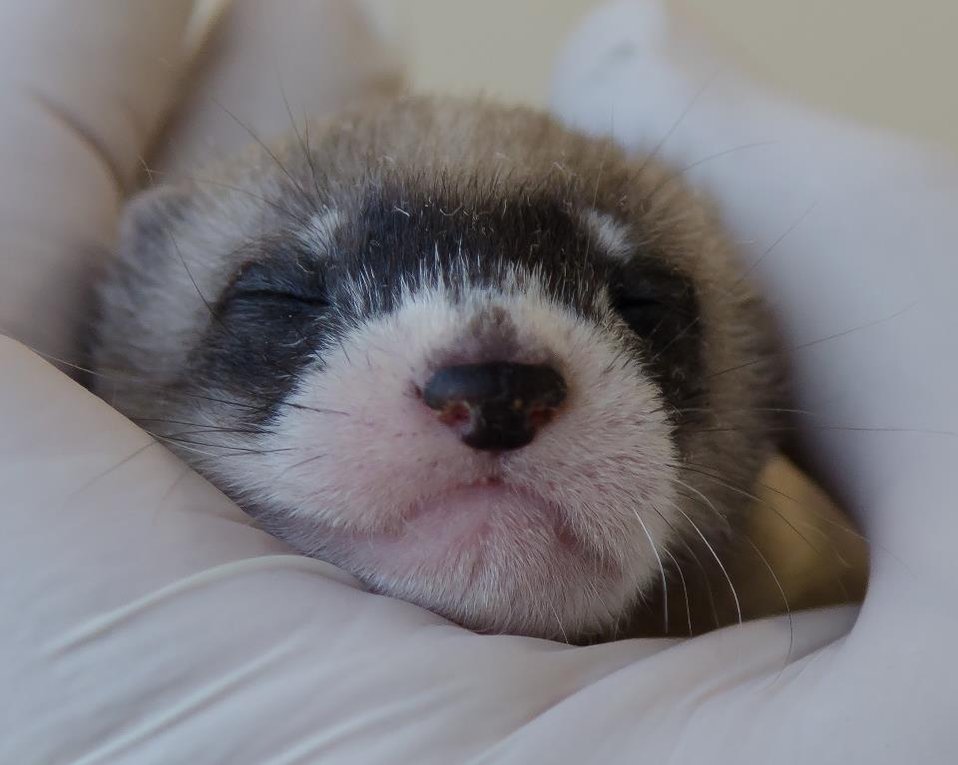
Black-footed Ferret Kit

Credit: Kimberly Tamkun / USFWS

Photo Contest Entry #196